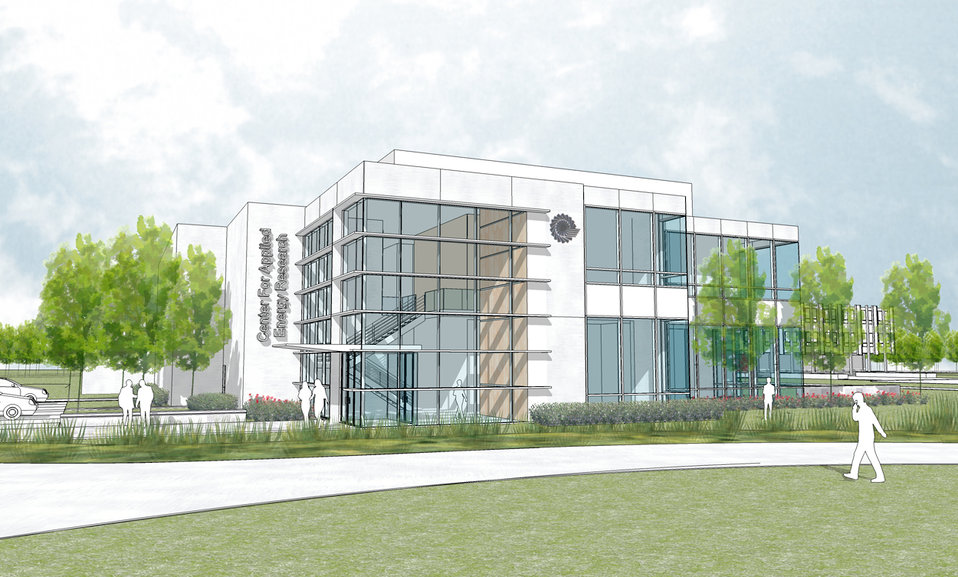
Recovery Act Grant; University of Kentucky

Proposed center for Applied Energy Research Laboratory Expansion, University of Kentucky.

Credit: Artist's rendering provided by BHDP Architecture